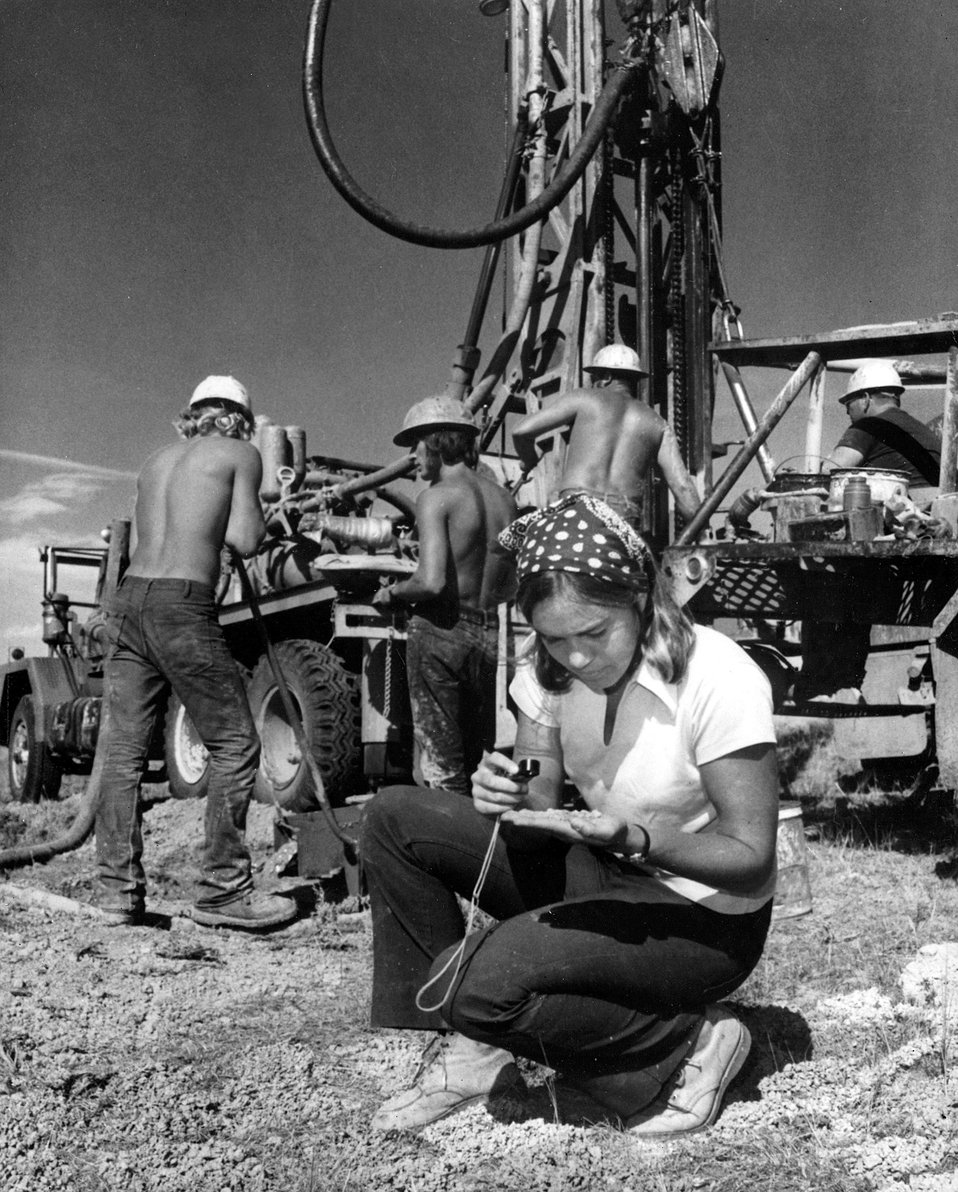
Uranium searcher - Carol Harmon, Casper, Wyoming based field geologist for Kerr-Mc Gee Corporation's minerals exploration department, checks core samples on a site where the company is test-drilling for uranium deposits. c. 1976